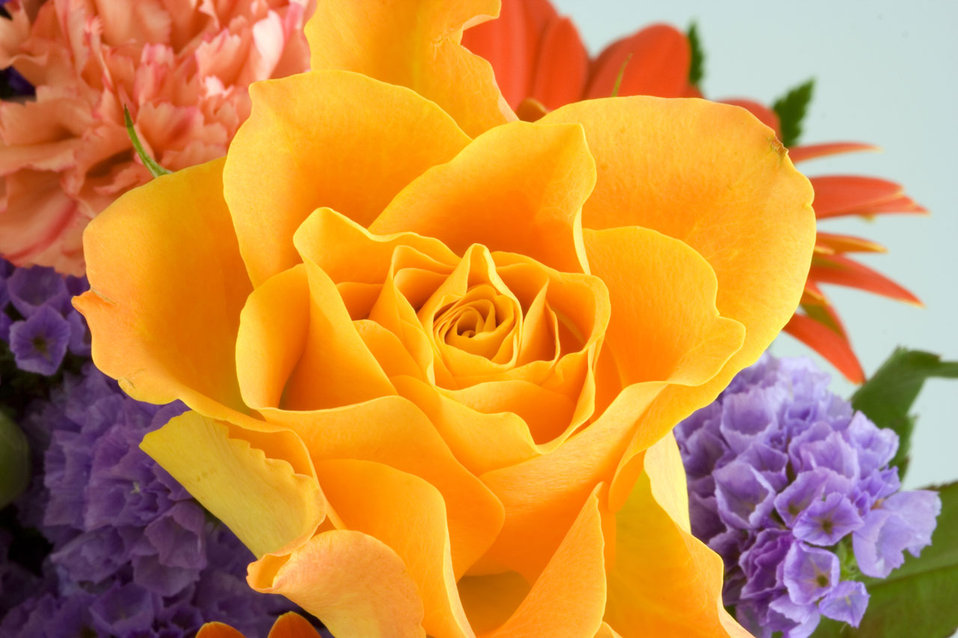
Yellow rose

A single yellow rose in bouquet.